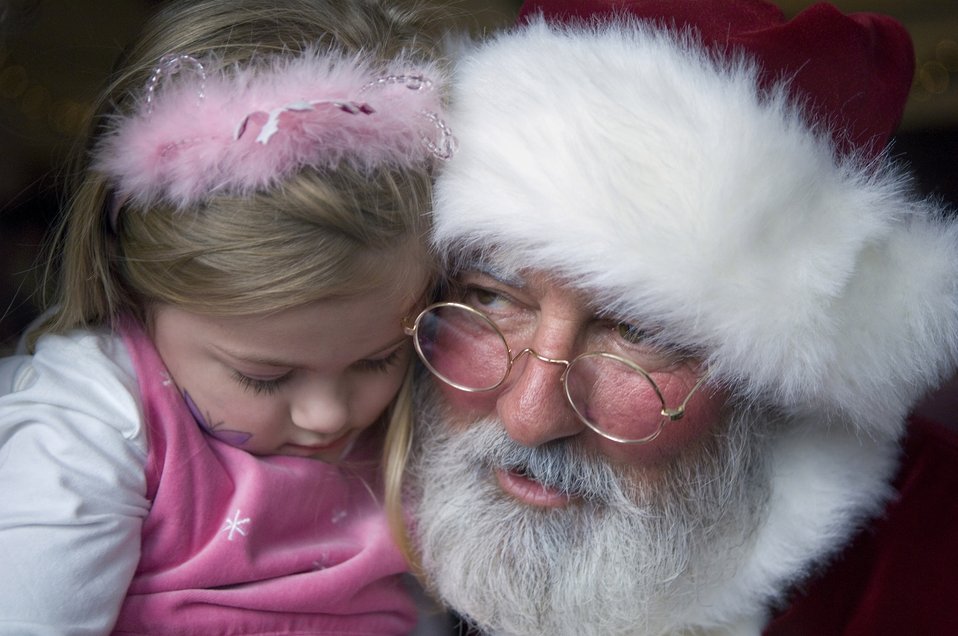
Santa and a young girl

Santa whispers reassurance to a young girl that she will get plenty of presents during the holiday season Dec. 2 at the Arnold Air Force Base, Tenn., Christmas party.